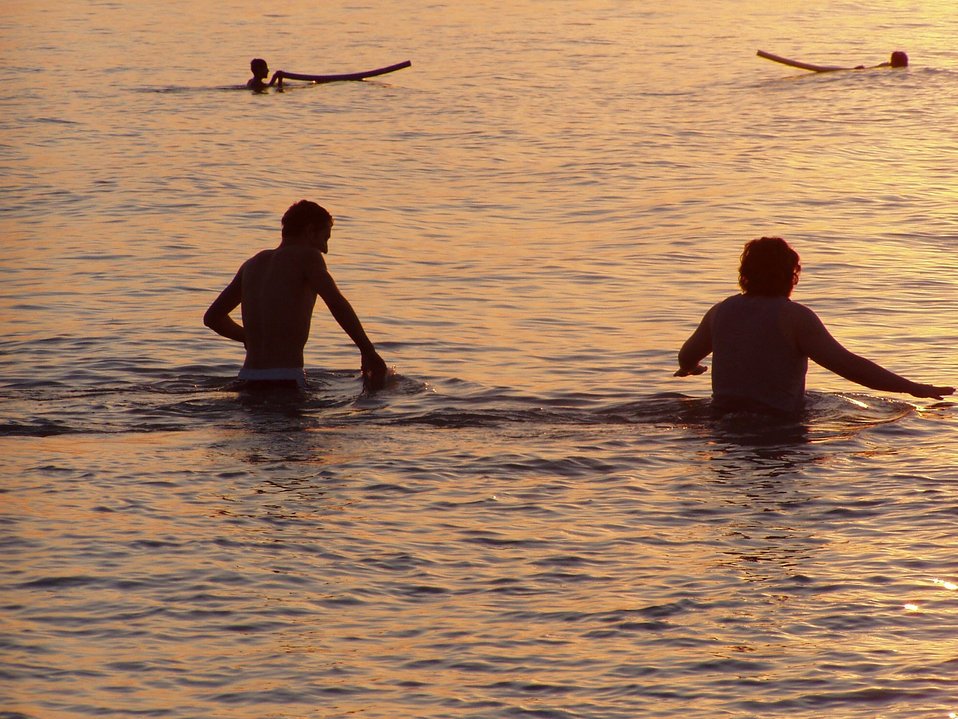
Indiana Dunes National Lakeshore